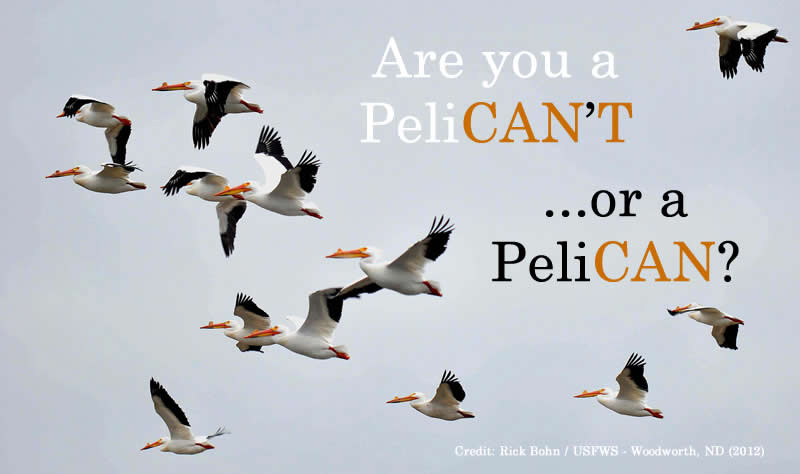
Are You a peliCAN?

Credit: Rick Bohn / USFWS

Taken at Chase Lake National Wildlife Refuge